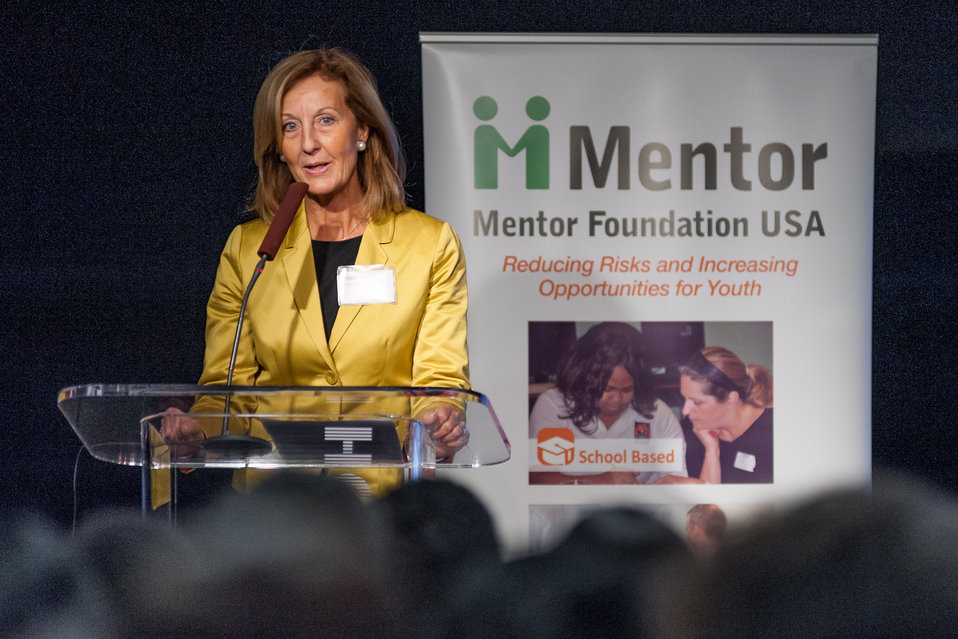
Mentor NDFW Event 2014

Mentor Foundation USA, in partnership with the National Institute on Drug Abuse (NIDA) and other key partners hosted a Youth Drug Facts Rally at the House of Sweden on Thursday, 30th January 2014. Approximately 200 students from five local high schools attended and had the opportunity to interact with top U.S. scientific experts, and inspiring guest speakers including Chairman of The Mentor Foundation Board of Trustees, Yvonne Thunell to “shatter the myths” about drugs and substance abuse, while pledging to stay drug-free.